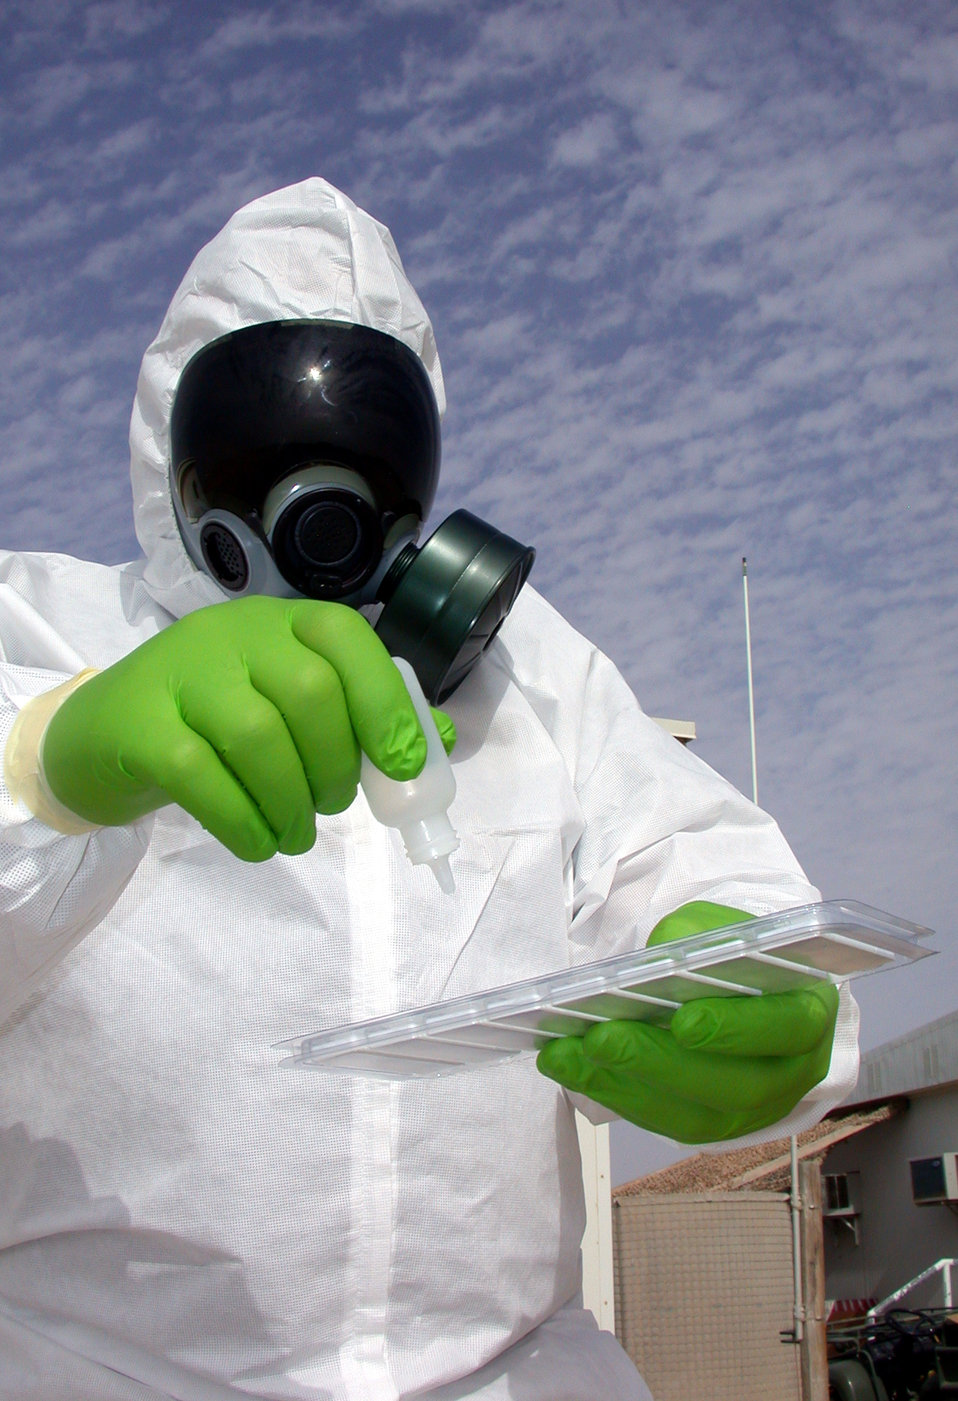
Not your old disaster prepardeness anymore

SOUTHWEST ASIA -- Tech. Sgt. Ivan Candelario holds a biological agent testing kit. He is the noncommissioned officer in charge of the 380th Expeditionary Readiness Flight's logistics section. The readiness flight is responsible for managing the Full Spectrum Threat Response program for the 380th Air Expeditionary Wing. This program is the successor to the Cold War-era disaster preparedness program.